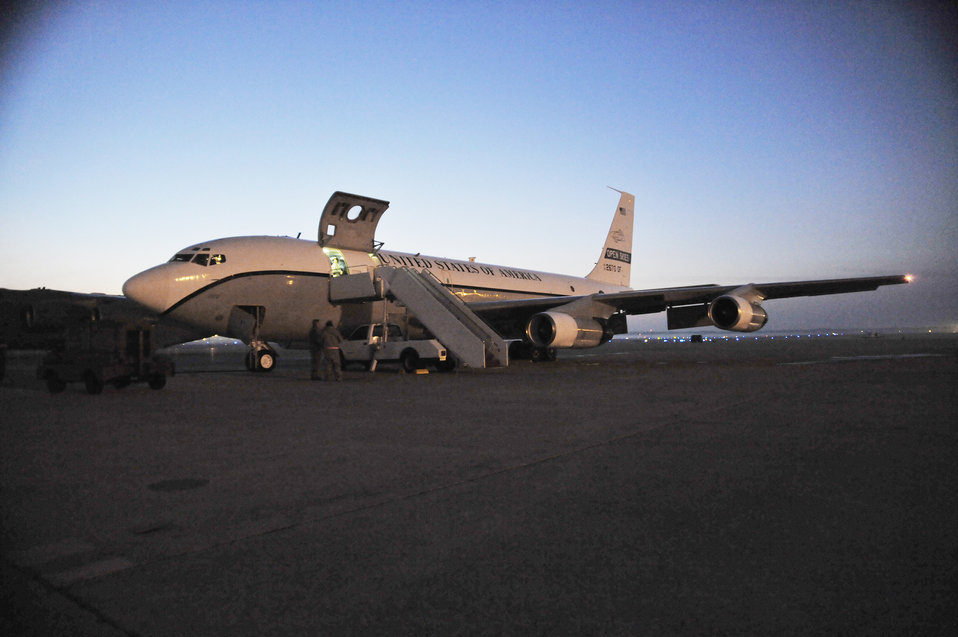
OC-135 crews assist from 15,000 feet

An OC-135B Open Skies aircraft goes through pre-flight checks Jan. 16, 2010, at Joint Base Andrews, Md. The OC-135 is with the 45th Reconnaissance Squadron at Offutt Air Force Base, Neb., and is used to conduct observation flights in support of the Open Skies Treaty.